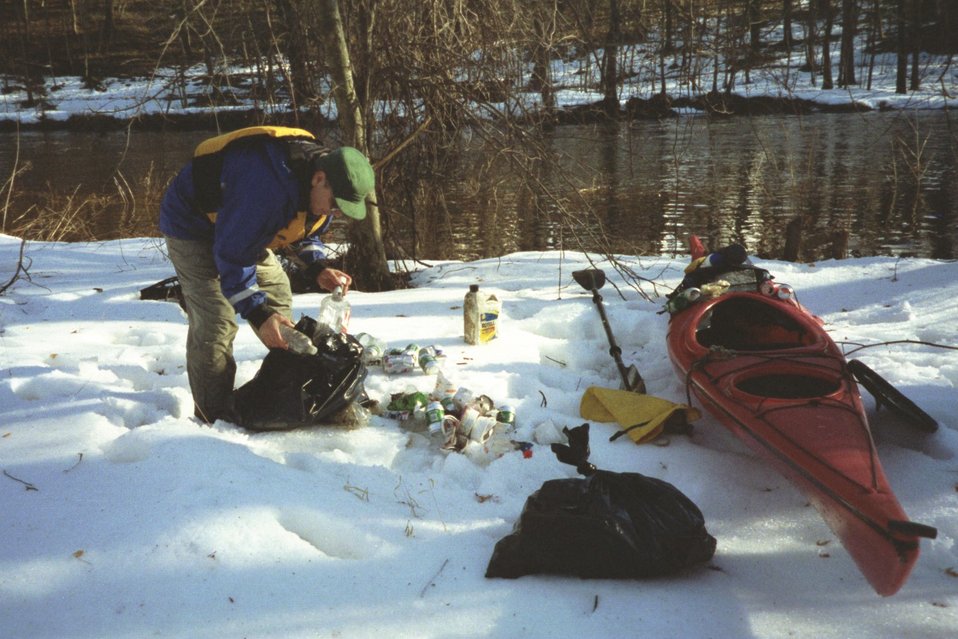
Uploaded by request of Al Peirce

Taken at Assabet River in Concord, Massachusetts

In the photo, I am transloading a good day's haul of trash from my kayak into plastic bags for later recycling. The trash had been collected while paddling the Wild & Scenic designated portion of the Assabet River from Egg Rock to Pine Street